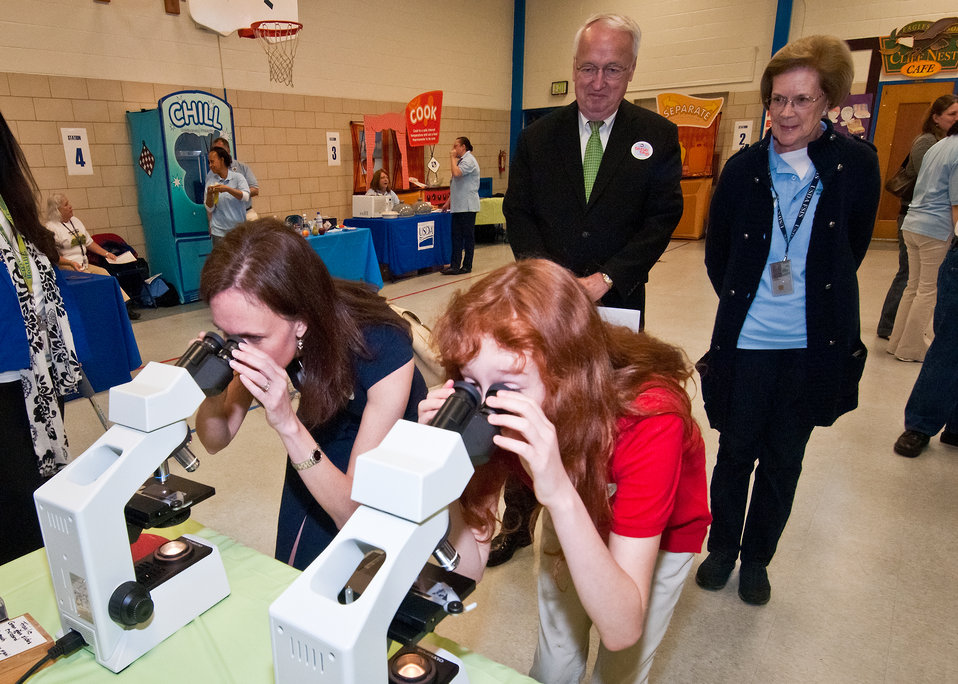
Dr. Elizabeth Hagen (left), Undersecretary, Food Safety and Emily Wise (right), a fifth grade student at Maryland City Elementary School in Laurel, MD, look through microscopes to view listeria and salmonella, two of the four most common bacteria found in food. The other two bacteria are campylobacter and E. coli. Behind Hagen and Wise are (left) Dr. Kevin Concannon, Undersecretary, Food Consumer and Nutrition Services and (right) Barbara Robinson, Food Safety Inspection Service. FSIS held a Food Safety Education Camp at Maryland City Elementary School, on Thursday, May 5, 2011.